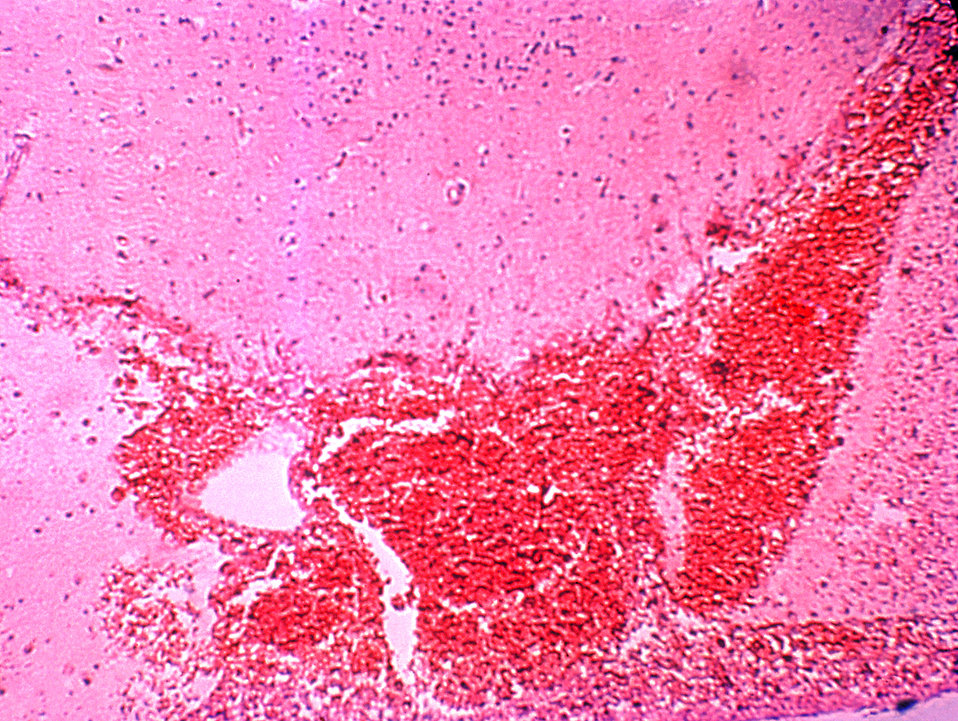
A photomicrograph demonstrating the histopathologic changes in brain tissue due to Salmonella typhi bacteria.